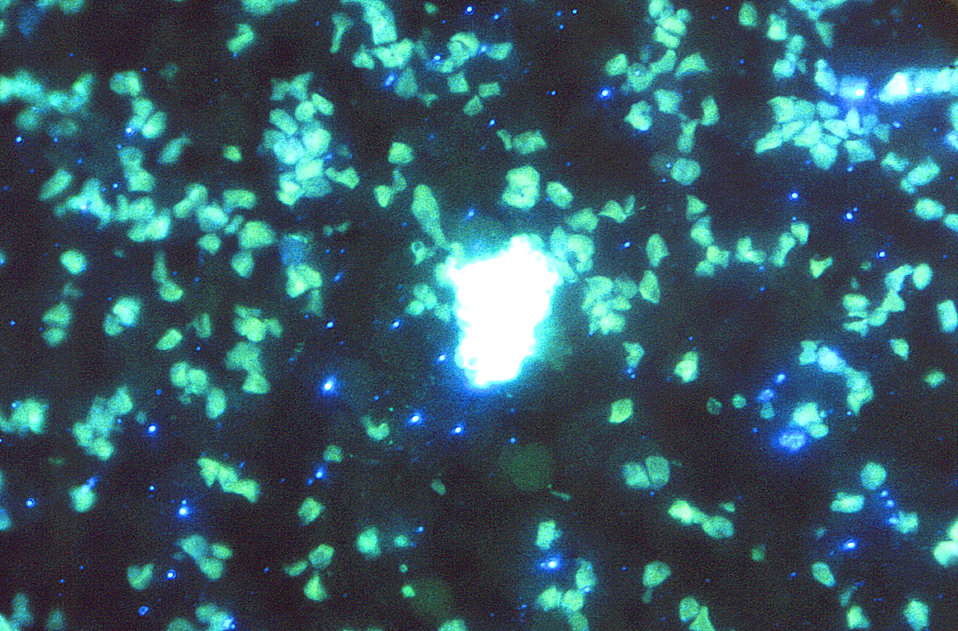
Magnified 562X, "digested", then stained using a fluorescent antibody-staining technique, this photomicrograph reveals the presence of Histoplasma capsulatum antigens in this human lung tissue specimen.